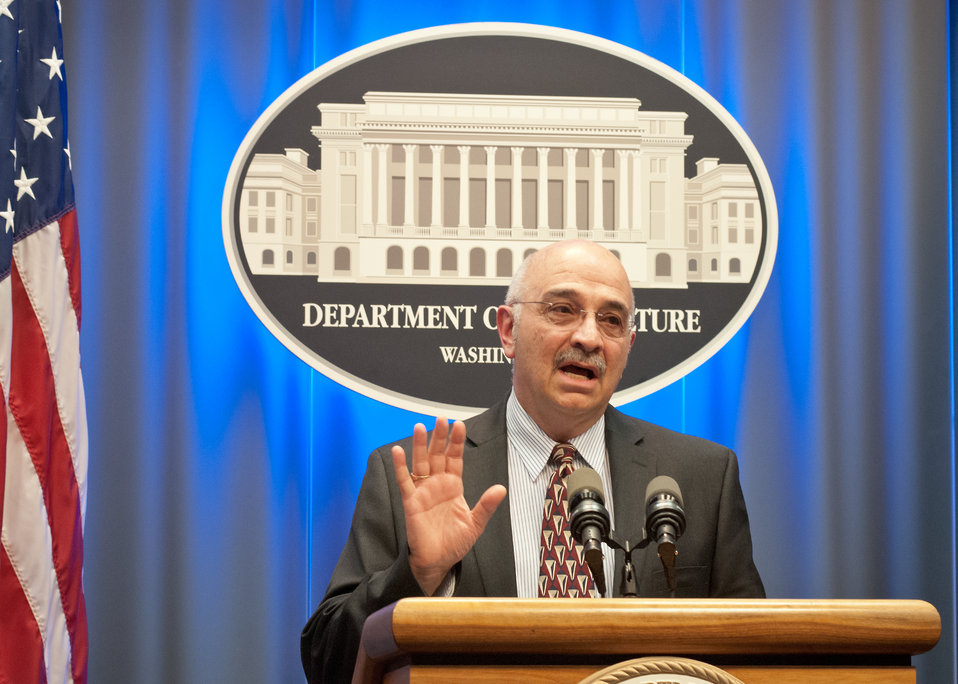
Marc Zammit, Vice President, Sustainability and Culinary Initiatives, Compass Group, a sponsor of the On-Farm Food Safety Project discussed the Compass Ag in the Middle project, level of local food purchasing they do and the need for farmers to adopt best practices in food safety. Zammit along with Agriculture Deputy Secretary Dr. Kathleen Merrigan and leaders from agriculture and food organizations announced the release of the On-Farm Food Safety Project Tool, www.onfarmfoodsafety.org at the United States Department of Agriculture in Washington, D.C., on Thursday, December 15, 2011. The On-Farm Food Safety Project is the first of its kind and was developed by a broad coalition of farm and produce industry partners with lead funding from the USDA Risk Management Agency.